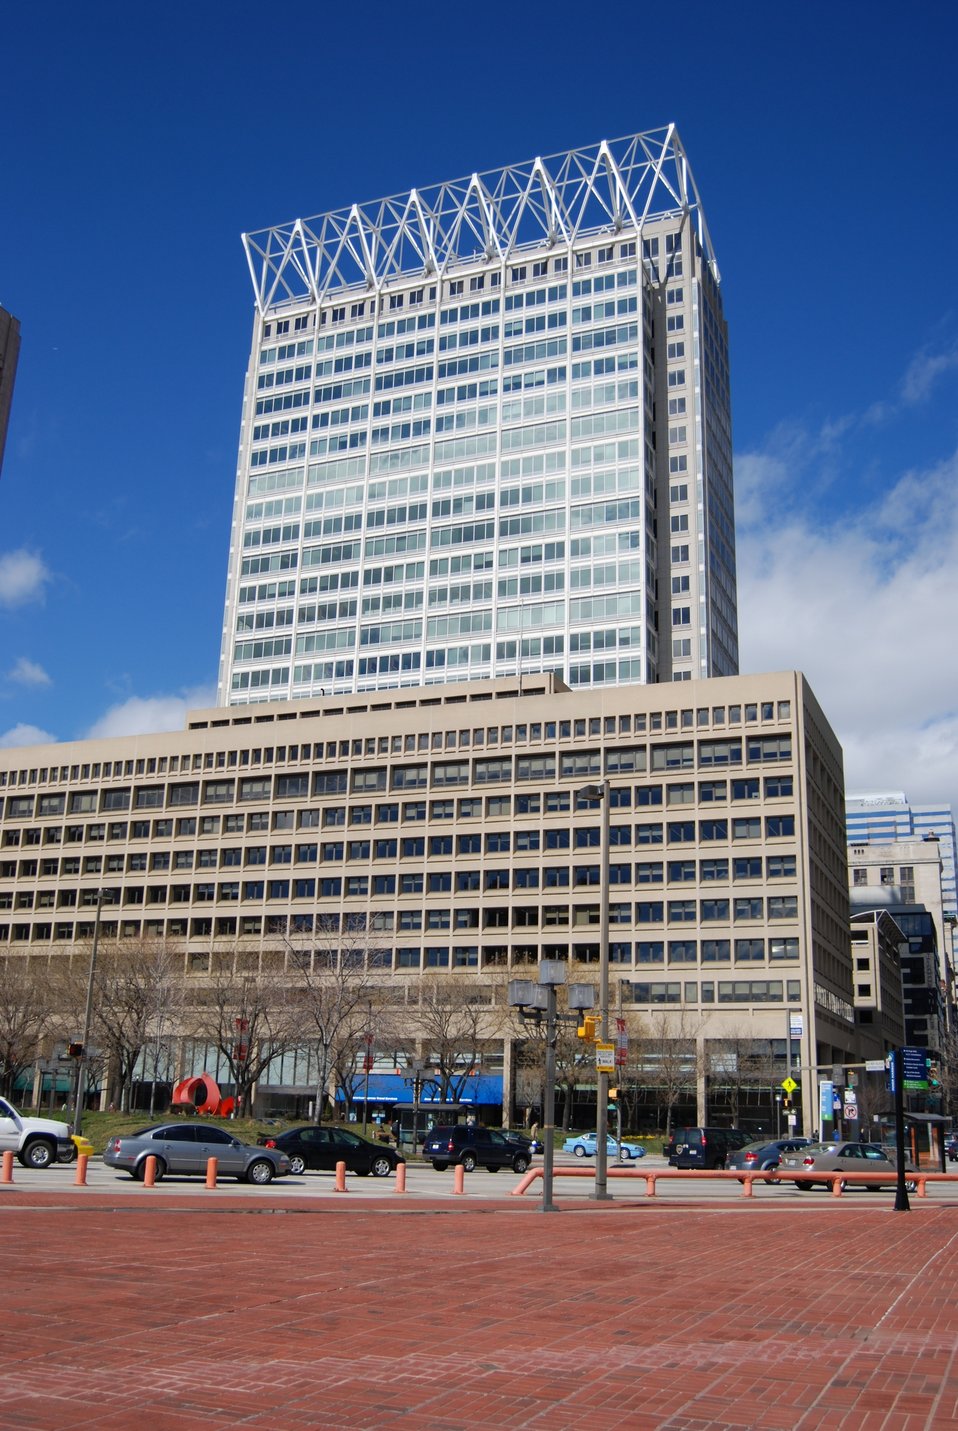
100 East Pratt Street Baltimore Maryland